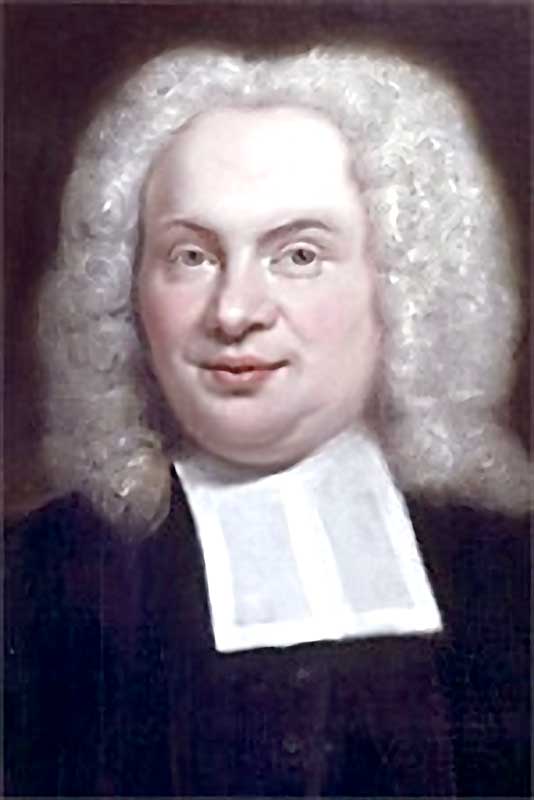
Albert-Voget